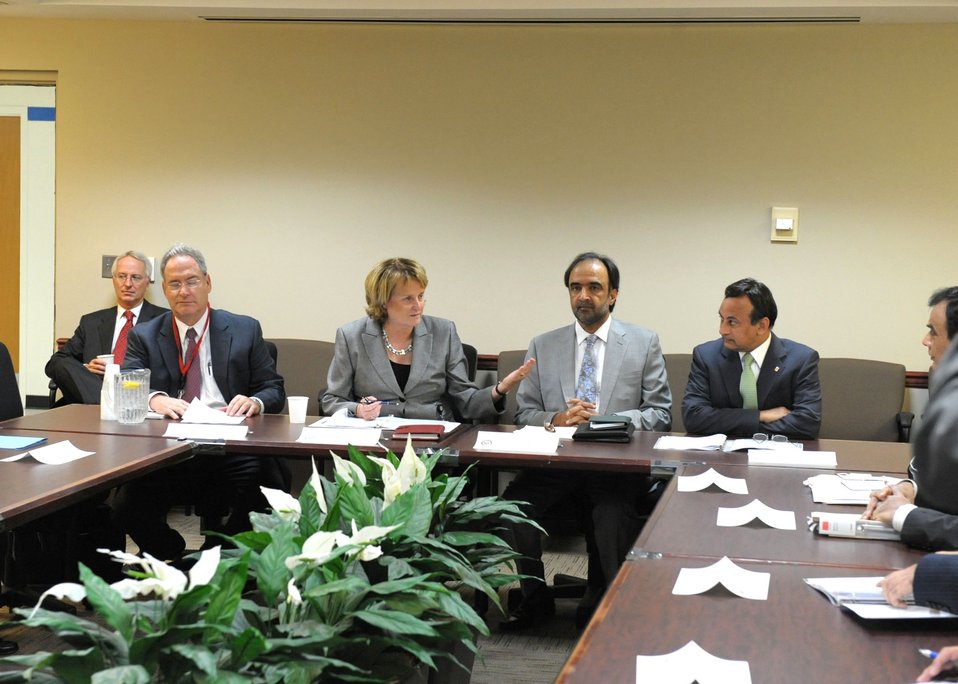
Under Secretary McHale Leads the U.S.-Pakistan Strategic Dialogue Communications Working Group

Members of the U.S.-Pakistan Strategic Dialogue Communications Working Group interact at the U.S. Department of State in Washington, D.C., on October 20, 2010. Participants included State Department Under Secretary for Public Affairs and Public Diplomacy Judith McHale, Office of the Special Representative for Afghanistan and Pakistan Special Advisor Ashley Bommer, Pakistani Secretary of Information Technology Naguibullah Malik, and Pakistani Secretary of Information and Broadcasting Mansoor Sohail.